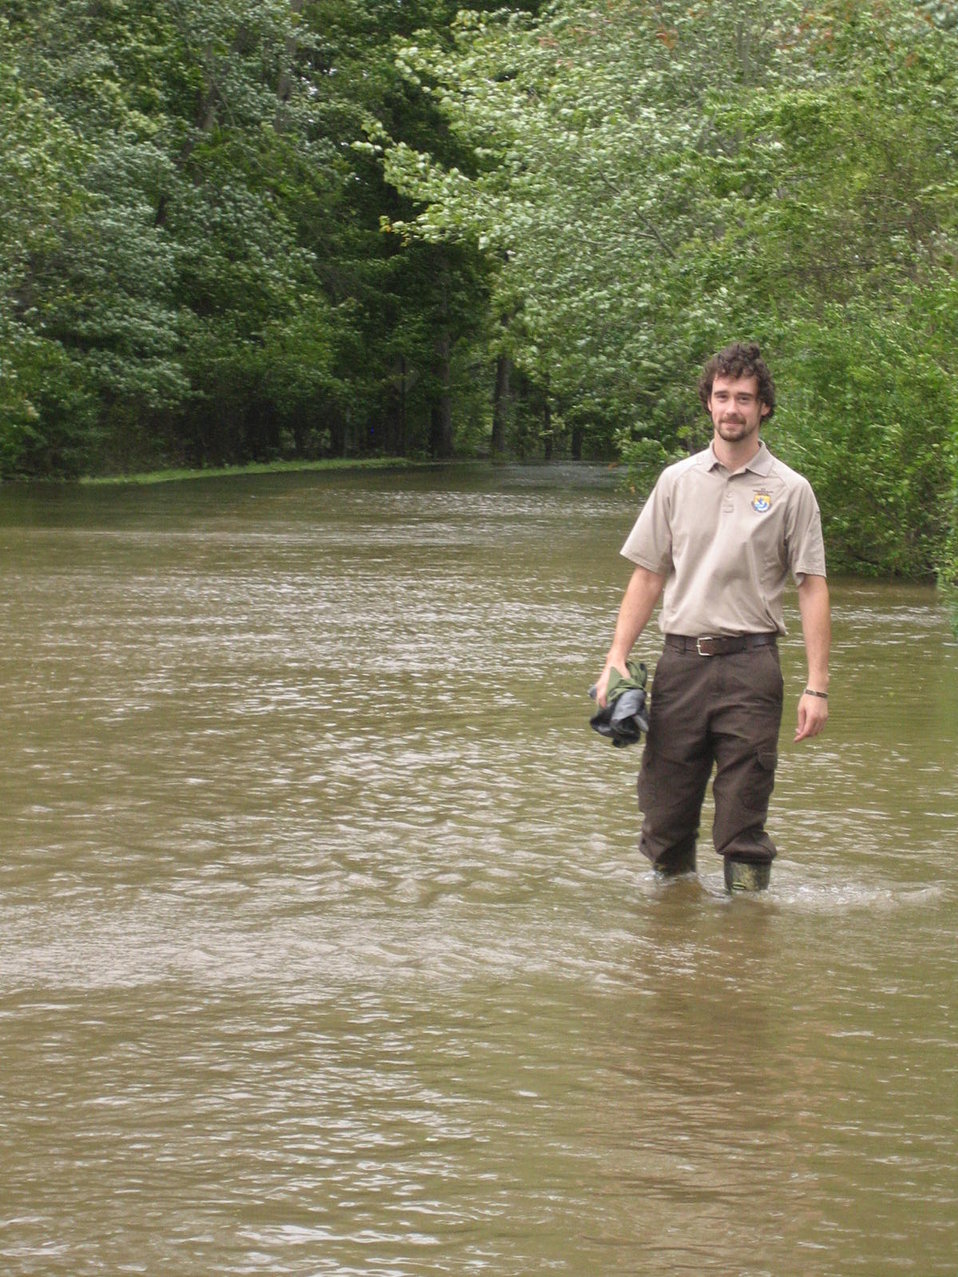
Dave Sagan assessing damage

Refuge employee, Dave Sagan, assessing the damage from Hurricane Irene at Great Swamp National Wildlife Refuge in New Jersey.